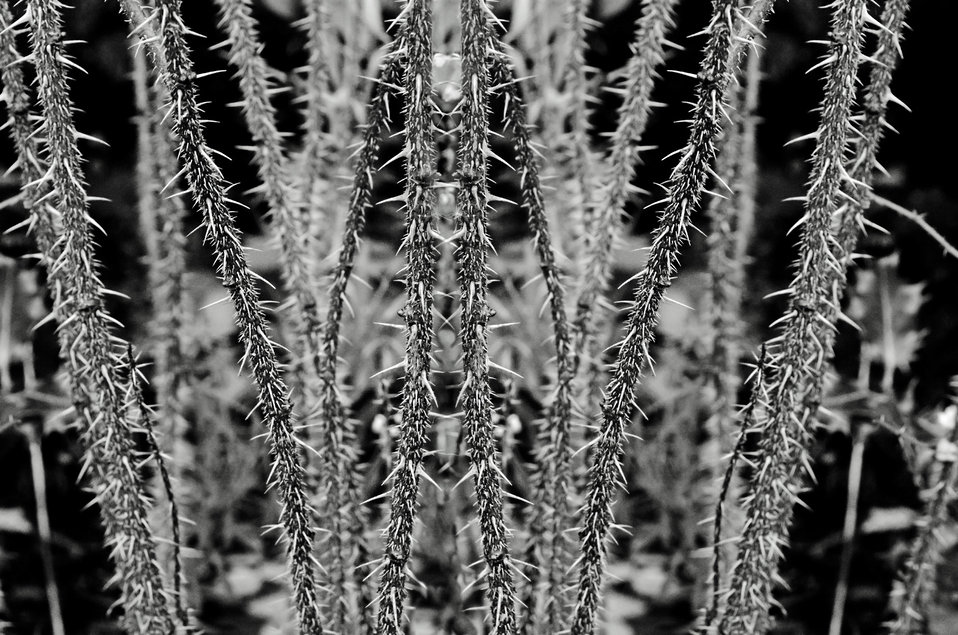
Thorns - macro.